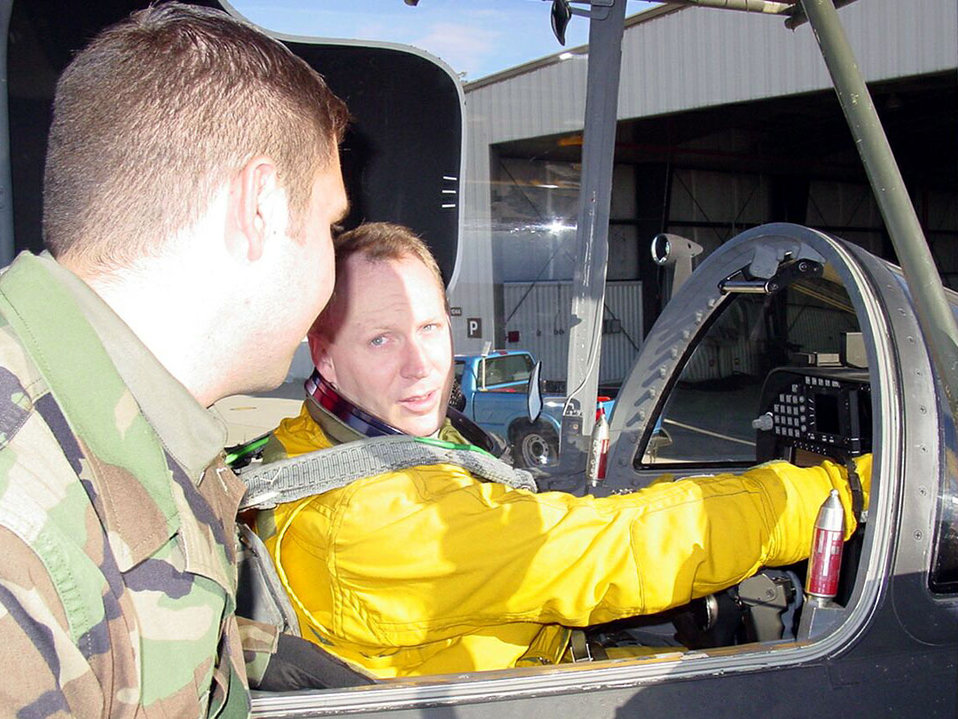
U-2 feedback

BEALE AIR FORCE BASE, Calif. -- Following a U-2 high flight, Maj. Jeffrey Olesen, the recipient of the 2002 Koren Kolligian Jr. Trophy, gives some feedback to Senior Airman Josh Ordiway, a crew chief with the 9th Aircraft Maintenance Squadron here.